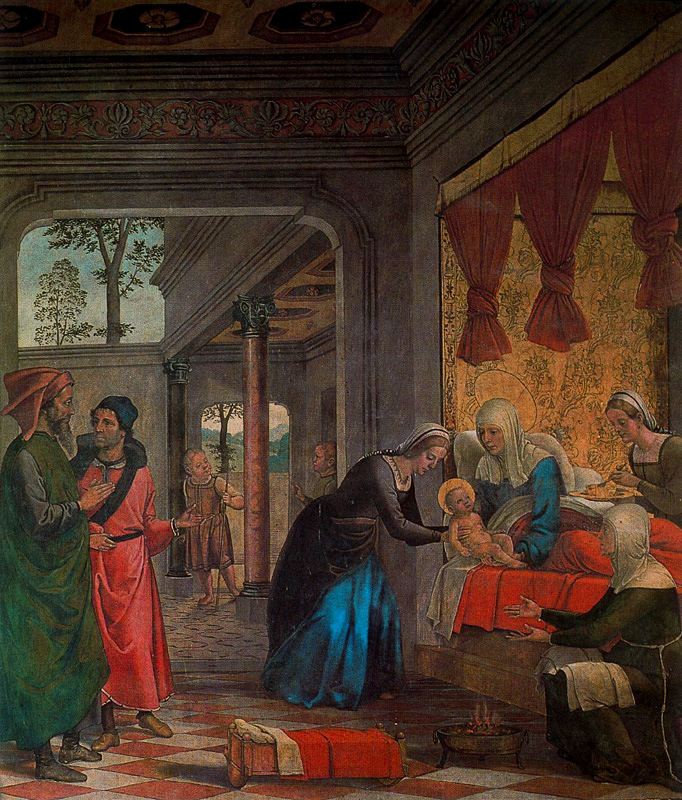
'The Birth of the Virgin', fresco by Juan de Borgoña, Cathedral of Toledo, c. 1495